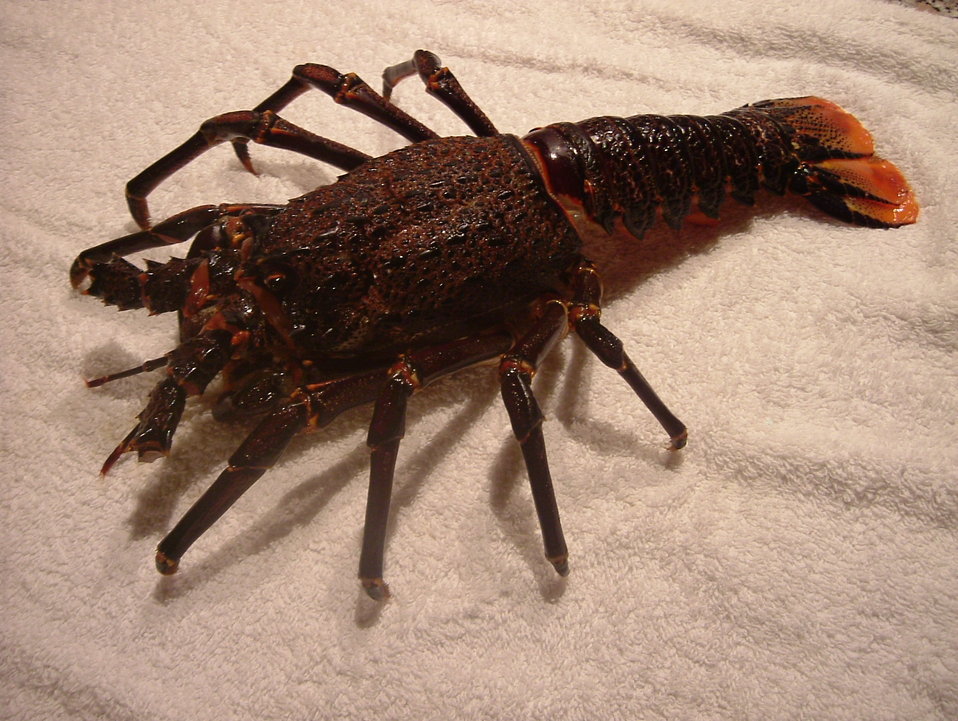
Picture taken shortly after capture. Note the absence of the antennas due to rough handling.